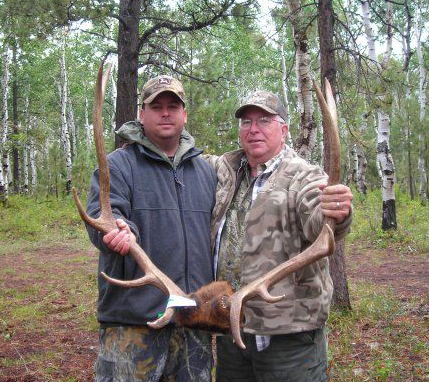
Frank Simms IV and Frank Simms III

National Wildlife Refuge System law enforcement officer Frank Simms IV and dad Frank Simms III show off a trophy of their 2009 elk bow hunt in the Uncompahgre National Forest in Colorado. Frank Simms IV is a wildlife officer at Pocosin Lakes National Wildlife Refuge in North Carolina. His dad was a U.S. Fish and Wildlife Service law enforcement officer before him. (Photo: USFWS)

The Service celebrated Father's Day, 2012, with this stunning picture.